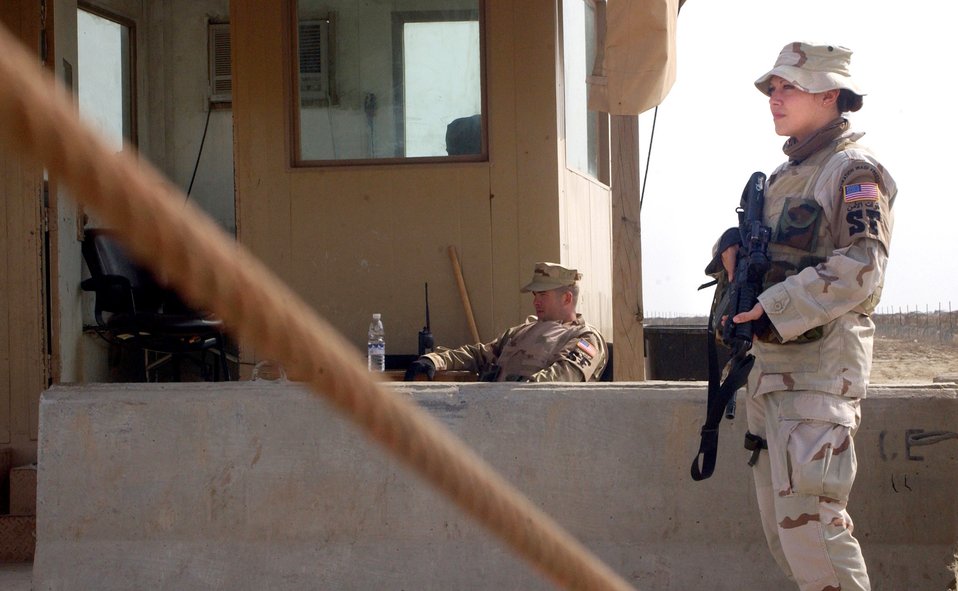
Guarding Iraq

ALI BASE, Iraq (AFPN) -- Senior Airman Celia Storts guards an entry control point, providing interior perimeter security here Feb. 1. Airman Storts is assigned to the 407th Expeditionary Security Forces Squadron.